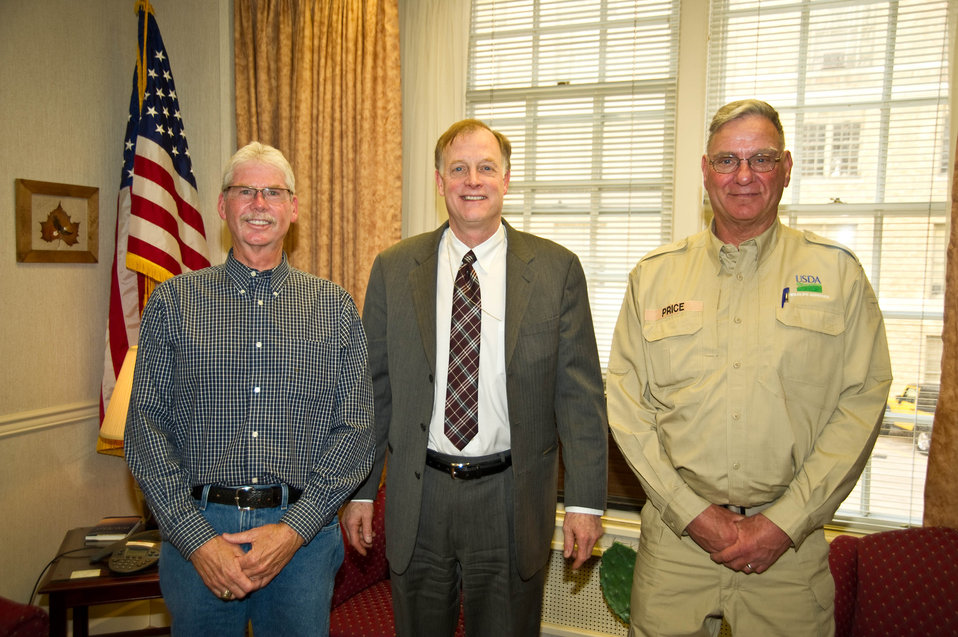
Agriculture Under Secretary for Marketing and Regulatory Programs (MRP) Edward Avalos welcomes back two U.S. Department of Agriculture (USDA) Animal and Plant health Inspection Service (APHIS) biologists from 18-week tours of duty in Afghanistan on Tuesday, Mar. 19, 2013. The biologists spent long days using their wildlife expertise to reduce aircraft hazards to American and coalition aircraft at military airbases. USDA APHIS New Mexico district supervisor Keel Price received the prestigious Award for Exemplary Civilian Service for managing a massive habitat modification project near the Kandahar Airfield. The Smithsonian’s Feather Identification Lab recognized USDA APHIS Idaho State director George Graves for his contributions of over 1,300 feather and mammal specimens to the Smithsonian. These USDA APHIS wildlife biologists have reduced damage at the warzone bases by approximately $2.6 million, decreasing wildlife strikes by about 65%. (L to R USDA APHIS Wildlife Service Biologist Idaho State director George Graves, USDA APHIS Deputy Administrator Wildlife Service Bill Clay, and USDA APHIS Wildlife Service Biologist New Mexico district supervisor Keel Price).